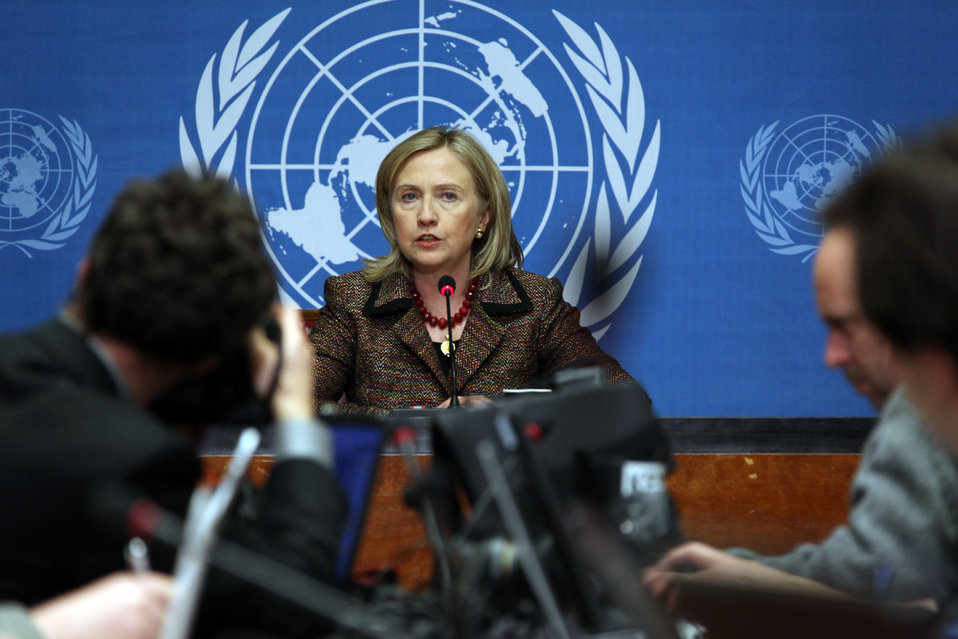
Secretary Clinton Speaks at a Press Conference

U.S. Secretary of State Hillary Rodham Clinton speaks at a press conference at the United Nations Office at Geneva, Switzerland, on February 28, 2011. The Secretary took questions from the press after addressing the Human Rights Council and the Conference on Disarmament.